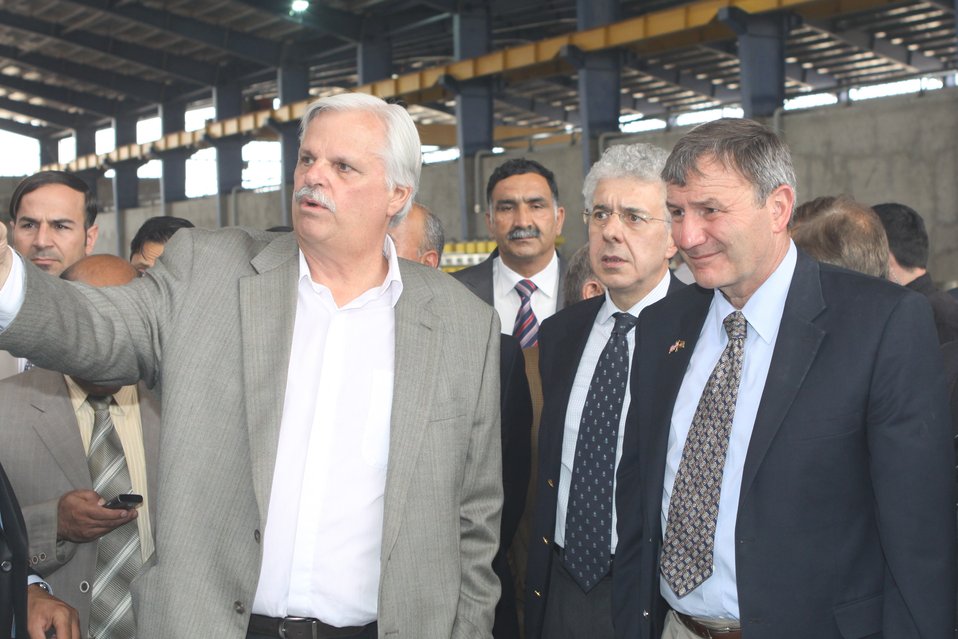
100525 Hirat Marble Conference 488